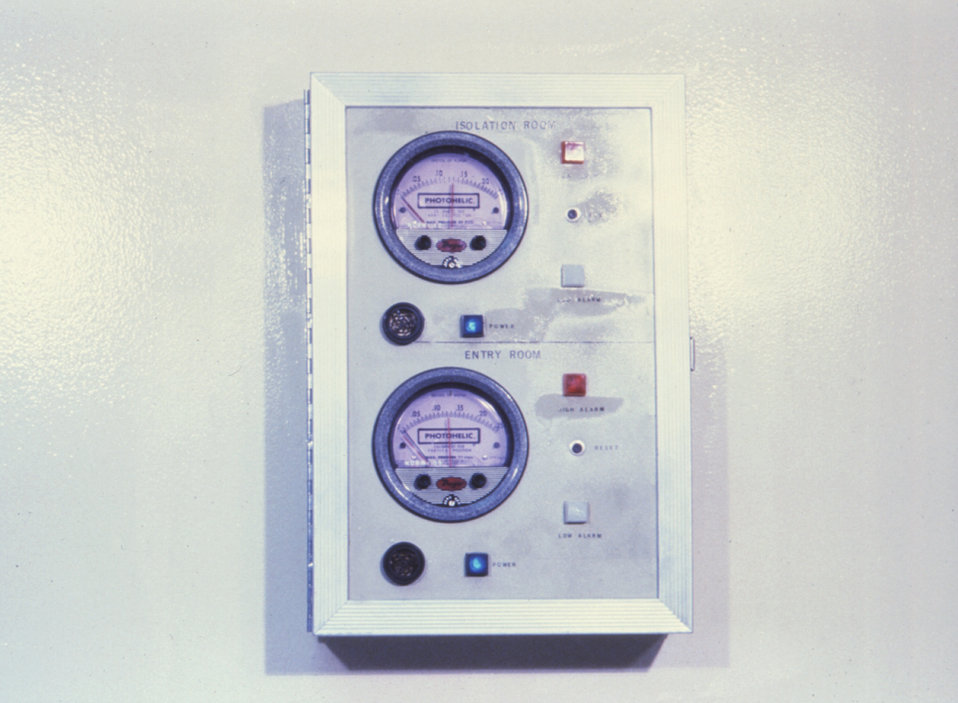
This 1980 photograph depicts the gas pressure gauges used in a Vicker's isolation suite at Georgia Baptist Medical Center. (now Atlanta Medical Center).